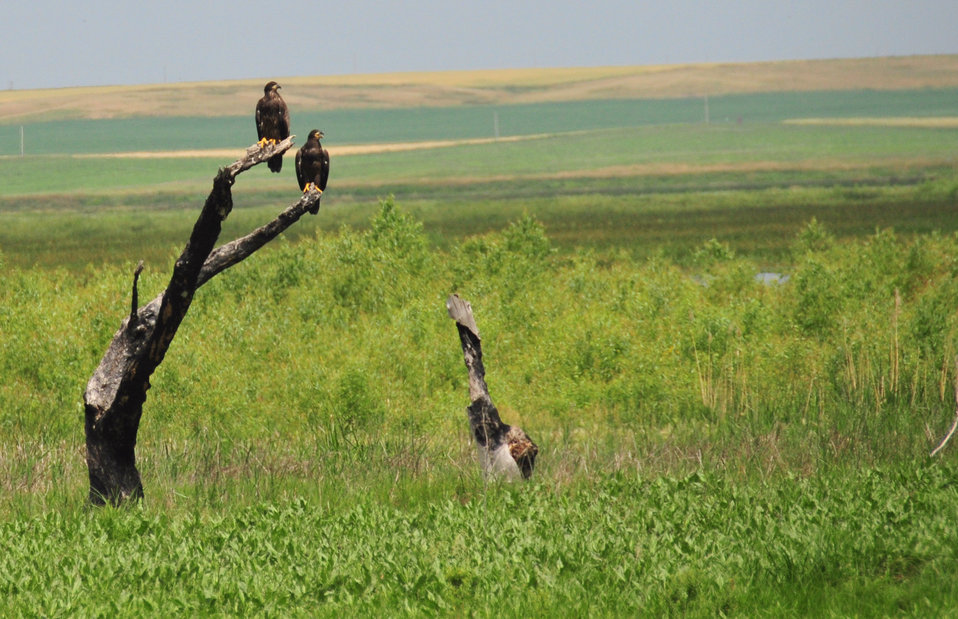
Bald eagle fledglings on Lacreek NWR 1

Pair of bald eagle fledglings resting after their first flight from the nest. Lacreek NWR.